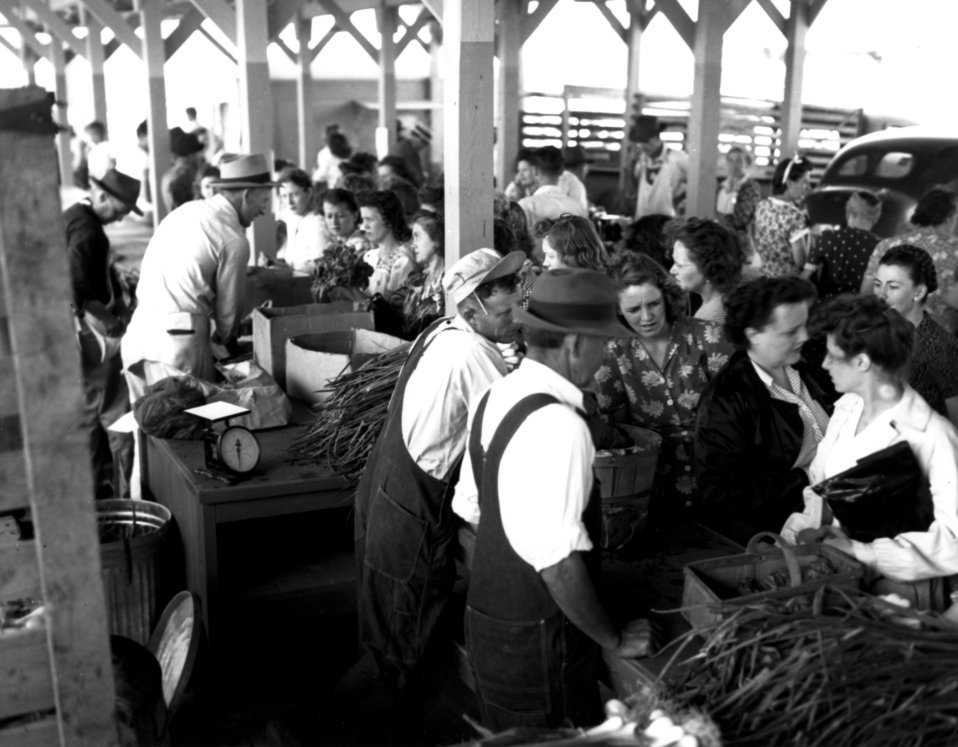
Business activity at Oak Ridge